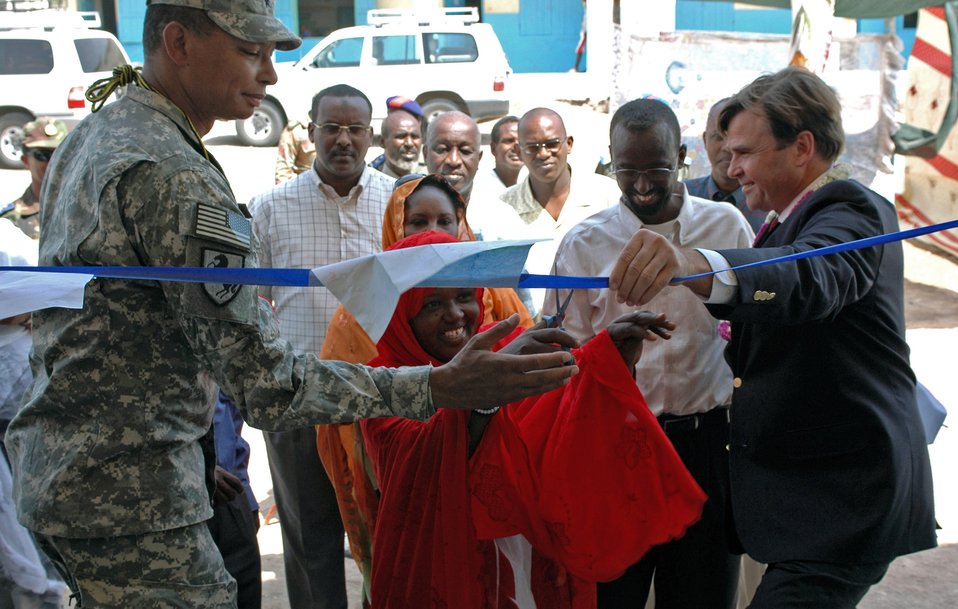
Additions to Djiboutian schools help children's education

Army Brig. Gen. Sanford Holman and Stuart Symington assist a local teacher in cutting a ribbon at the dedication ceremony Sept. 6 for the of new classrooms, stocked library, bathroom facilities, stage area and power supply to the Goubetto primary school in the village of Balbala. The ceremony highlighted the hand-over of the facility to the local community to take care of and preserve. General Holman is the Combined Joint Task Force-Horn of Africa deputy commander and Mr. Symington is the U.S. Ambassador to Djibouti.